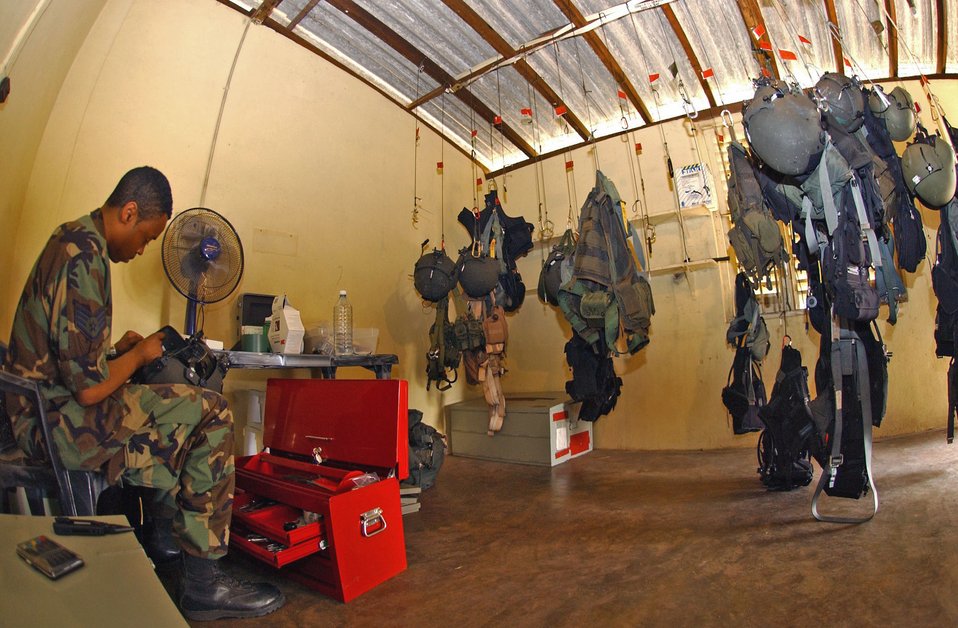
Can you hear me?

KATUNAYAKE AIR BASE, Sri Lanka -- Staff Sgt. Rob Ivory repairs a helmet voice transmitter Jan. 11 here. The Airman is deployed to Sri Lanka with the 33rd Expeditionary Rescue Squadron to transport U.S. relief supplies to devastated areas of the country in support of Operation Unified Assistance.